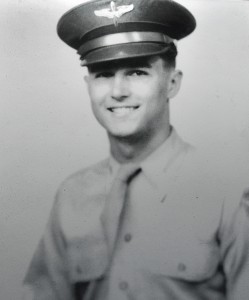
Double Ace Photos

An image of retired Col. Ralph Parr. When he retired in 1976, Parr had flown more than 6,000 hours and received more than 60 decorations, including the Distinguished Service Cross, Air Force Cross, Silver Star and 10 Distinguished Flying Crosses.